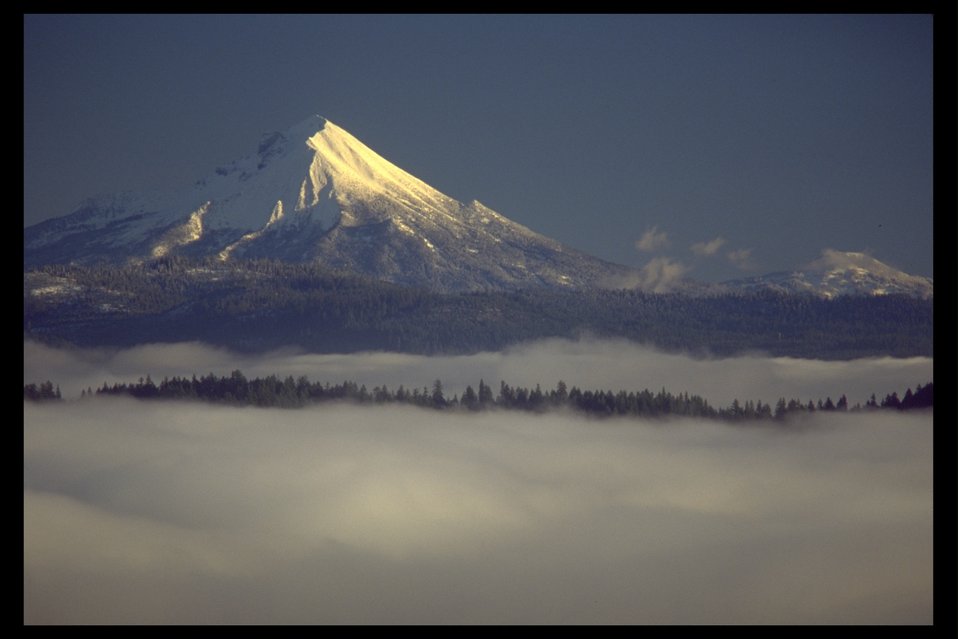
Last light on Mount McLoughlin, from West Branch Elk Creek.